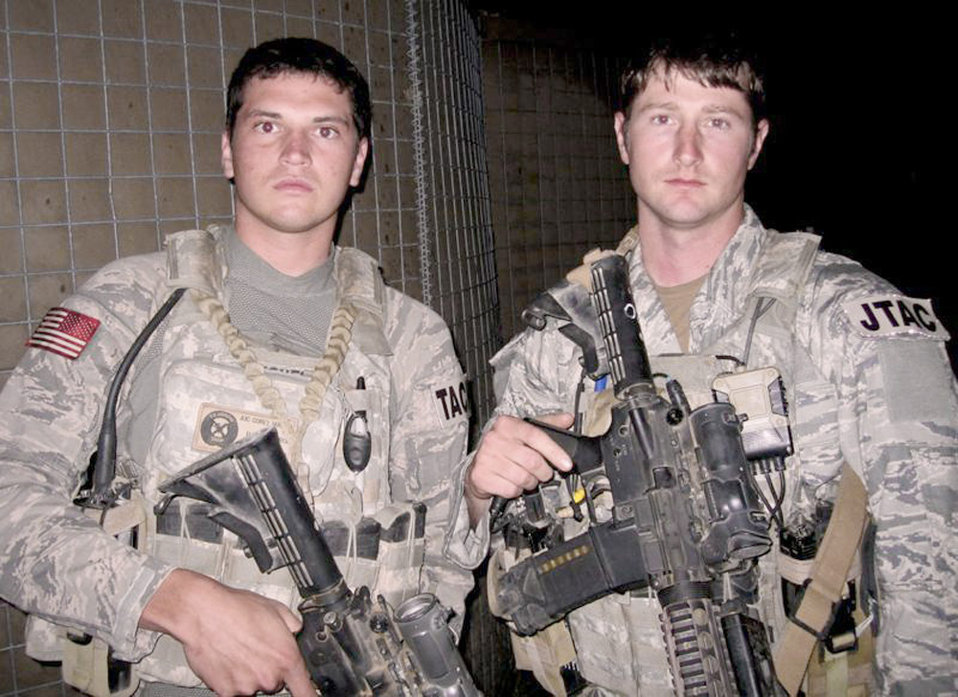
Air Force JTAC's

Airman 1st Class Corey Hughes (left) and Senior Airman Daniel Garner stop for a picture May 10, 2010, at Forward Operating Base Orgun-E, Afghanistan, after returning from a recent mission. Airman Hughes is a tactical air control party Airman. Airman Garner is a joint terminal attack control Airman. Both Airmen are assigned to the 817th Expeditionary Air Support Operations Squadron, and are deployed from the 19th ASOS at Ft. Campbell, Ky.